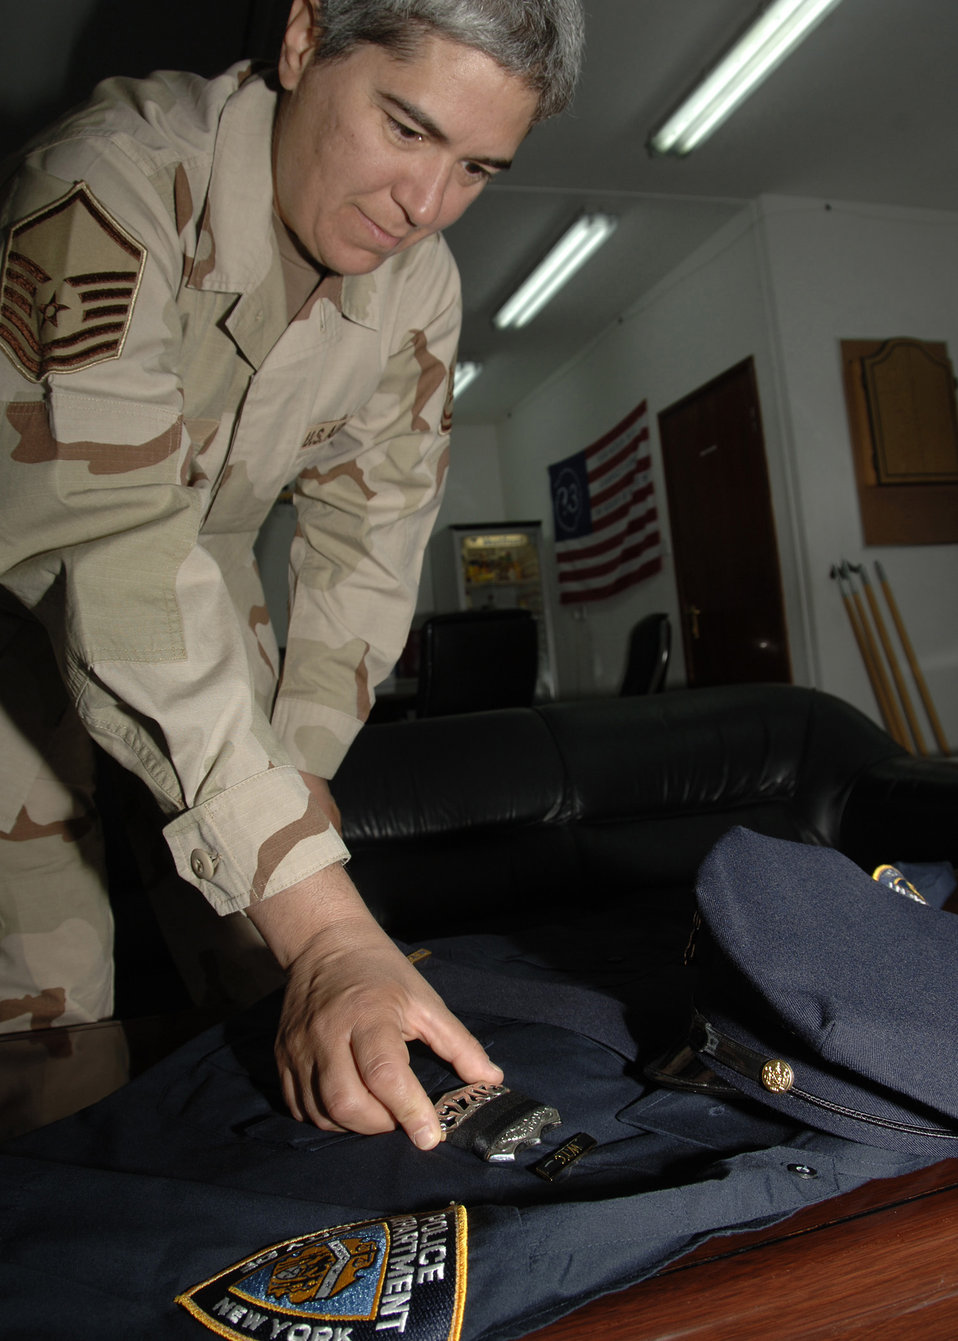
Deployed N.Y.P.D. officer dedicates uniform for 9/11 display

Master Sgt. Rose Condello arranges the badge on her New York Police Department uniform she donated Sept. 11 at a Southwest Asia air base. The uniform was donated for a display at the 380th Air Expeditionary Wing where she is currently deployed. The badge is adorned with the traditional mourning band. Above the badge she has placed the breast band worn by New York City police officers with the letters